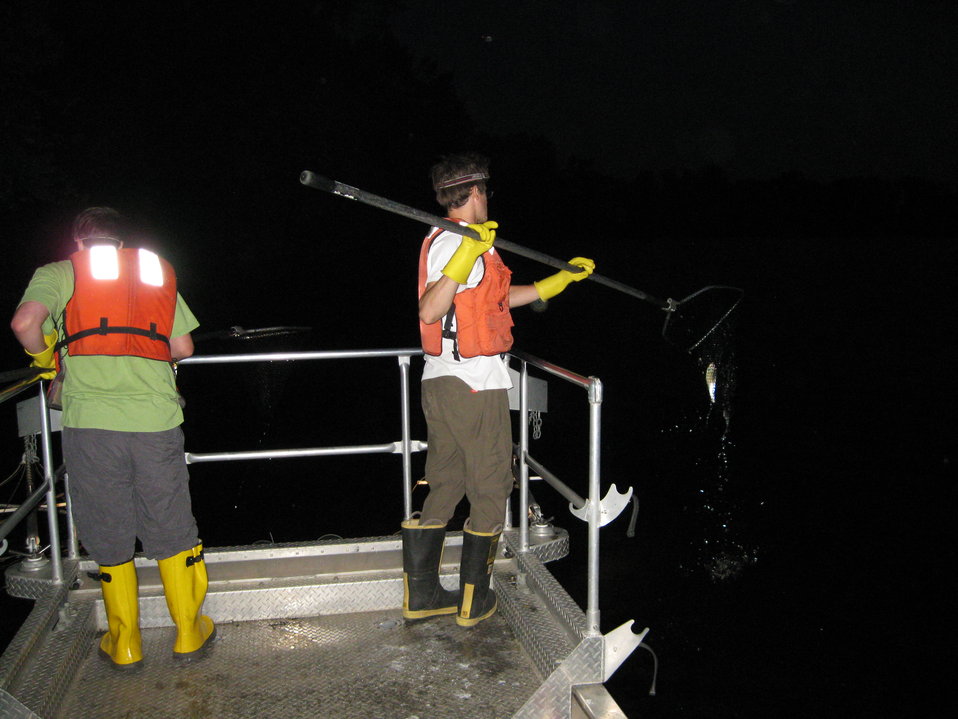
Electrofishing at the Connecticut River Coordinator office.